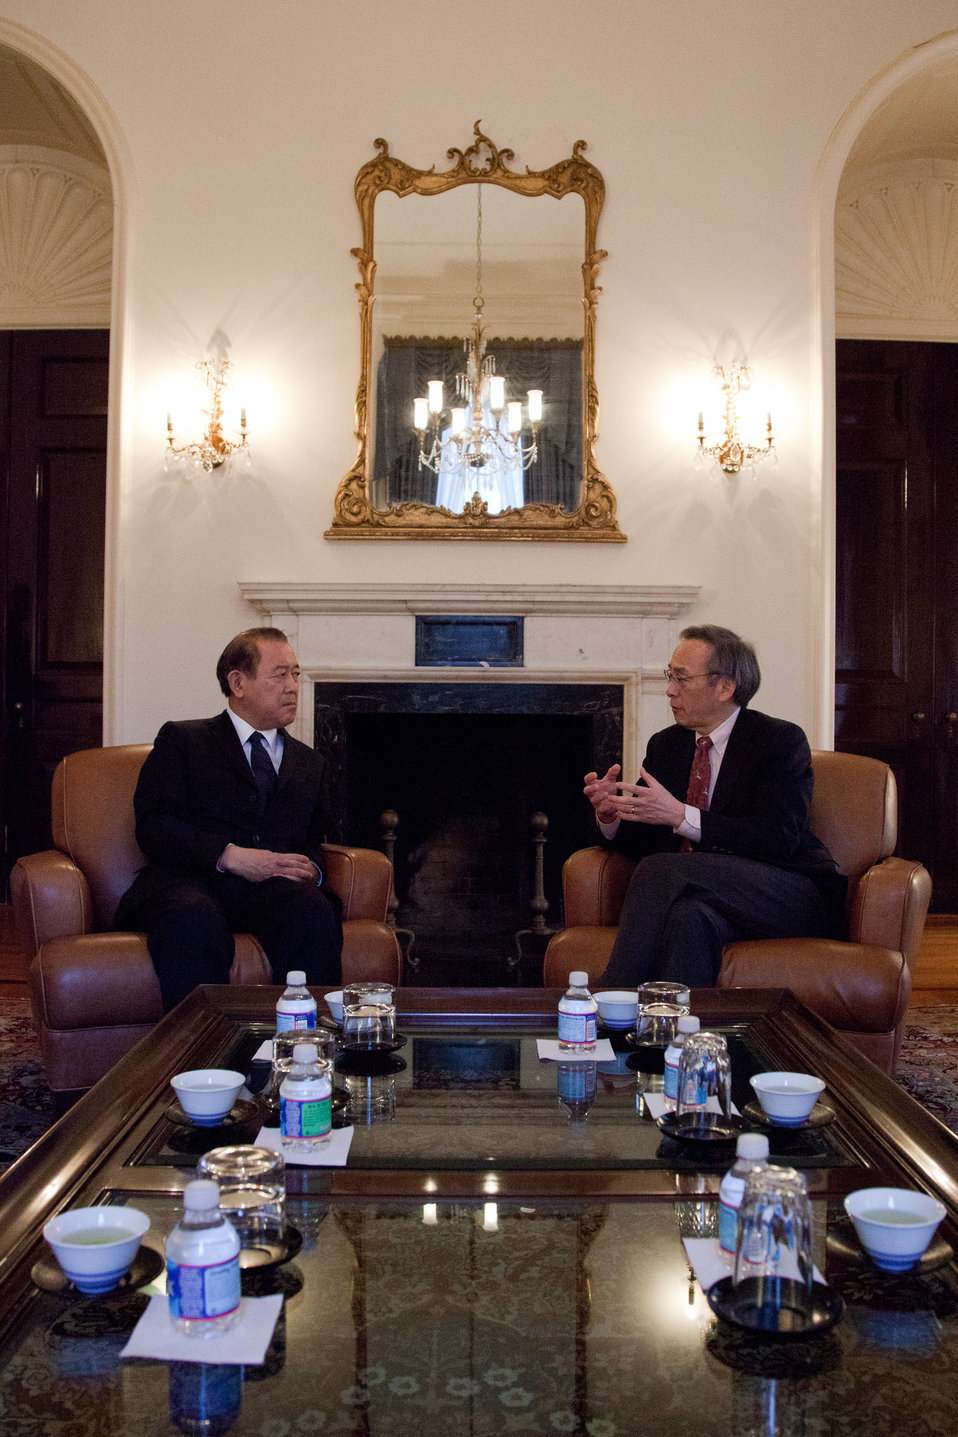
Sec. Chu visits Japanese Embassy 8 of 8

Sec. Steven Chu meets with Japanese Ambassador to the United States, Ichiro Fujisaki.